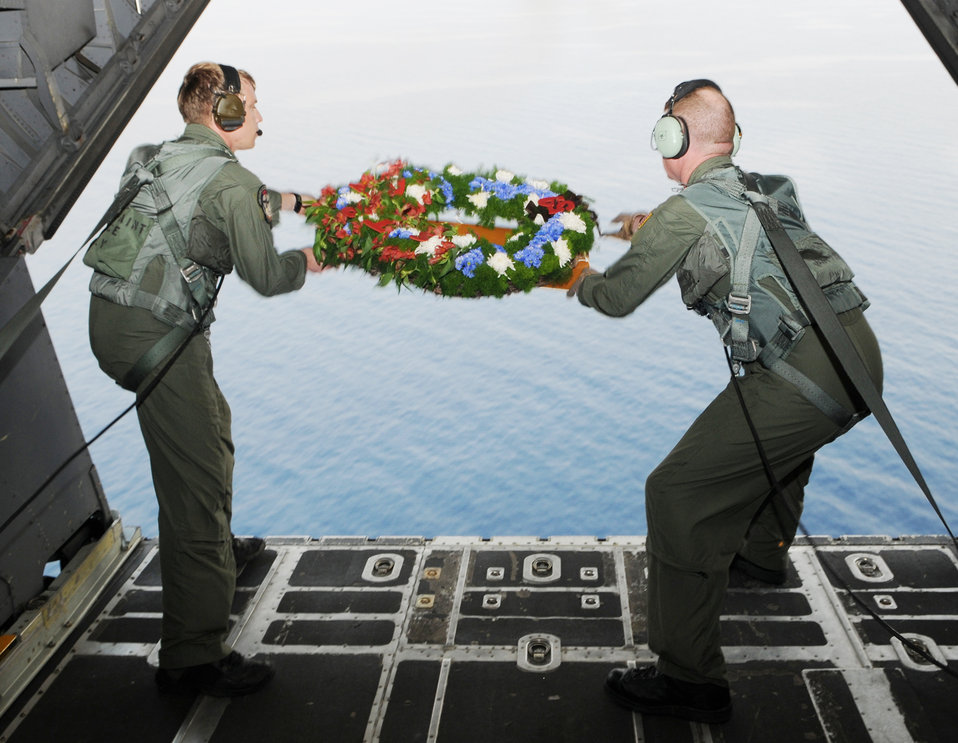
We remember

Loadmasters Staff Sgt. Jim Kosnosky (left) and Tech. Sgt. Aaron Kay release a memorial wreath out the back of a MC-130H Combat Talon II Feb. 26, 2010, near Capones Island, Philippines. The wreath honors the people killed 28 years ago when